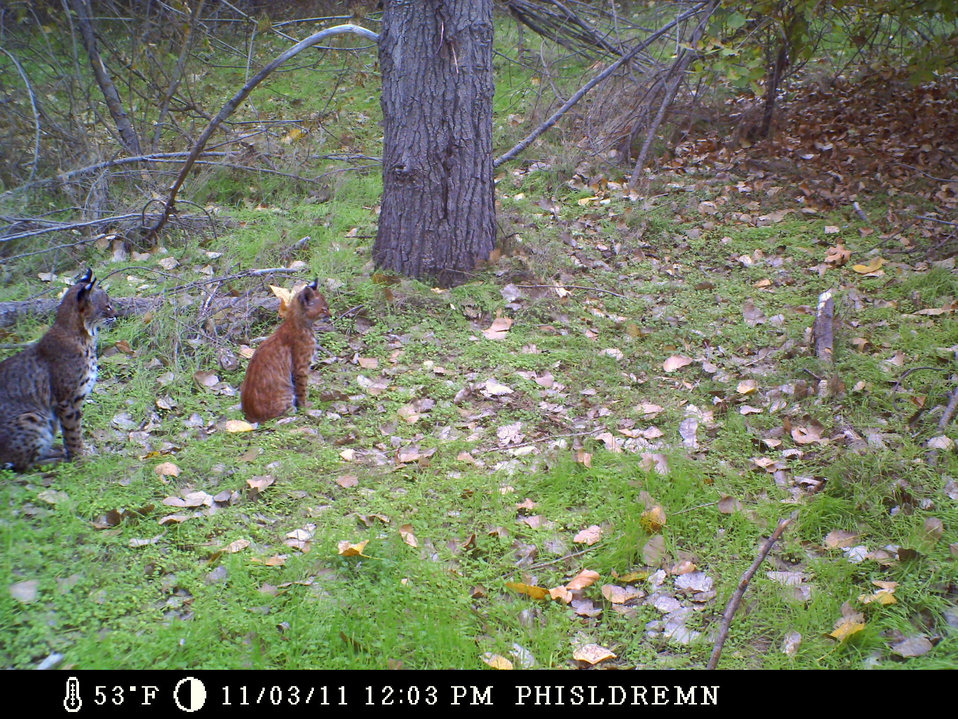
Did you hear something?

trail camera photo
Sacramento River National Wildlife Refuge, CA